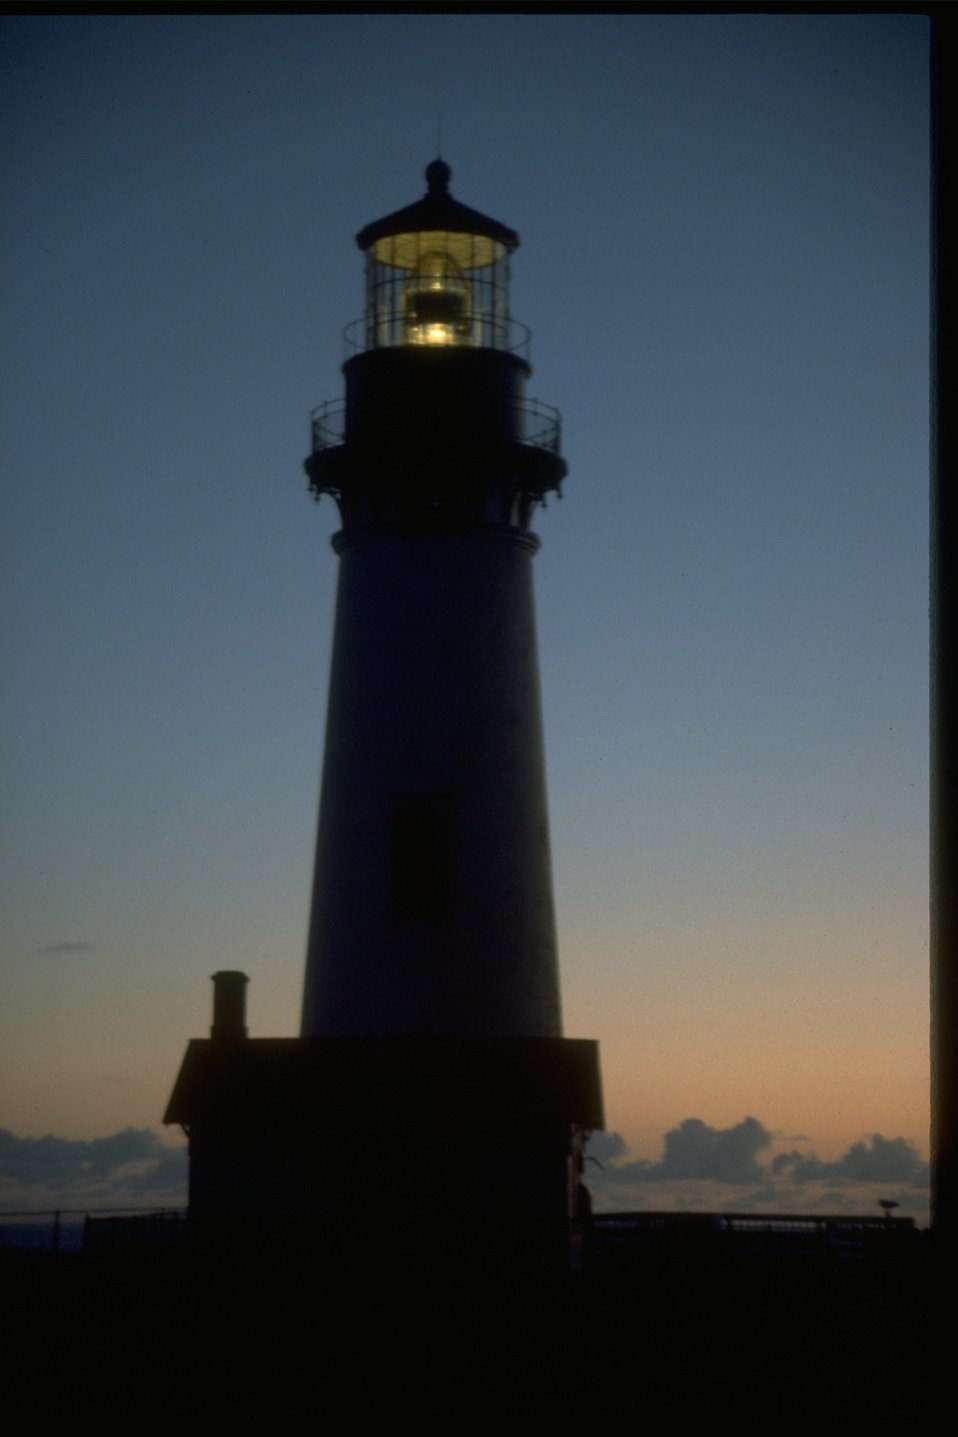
Yaquina Head lighthouse at sunset.